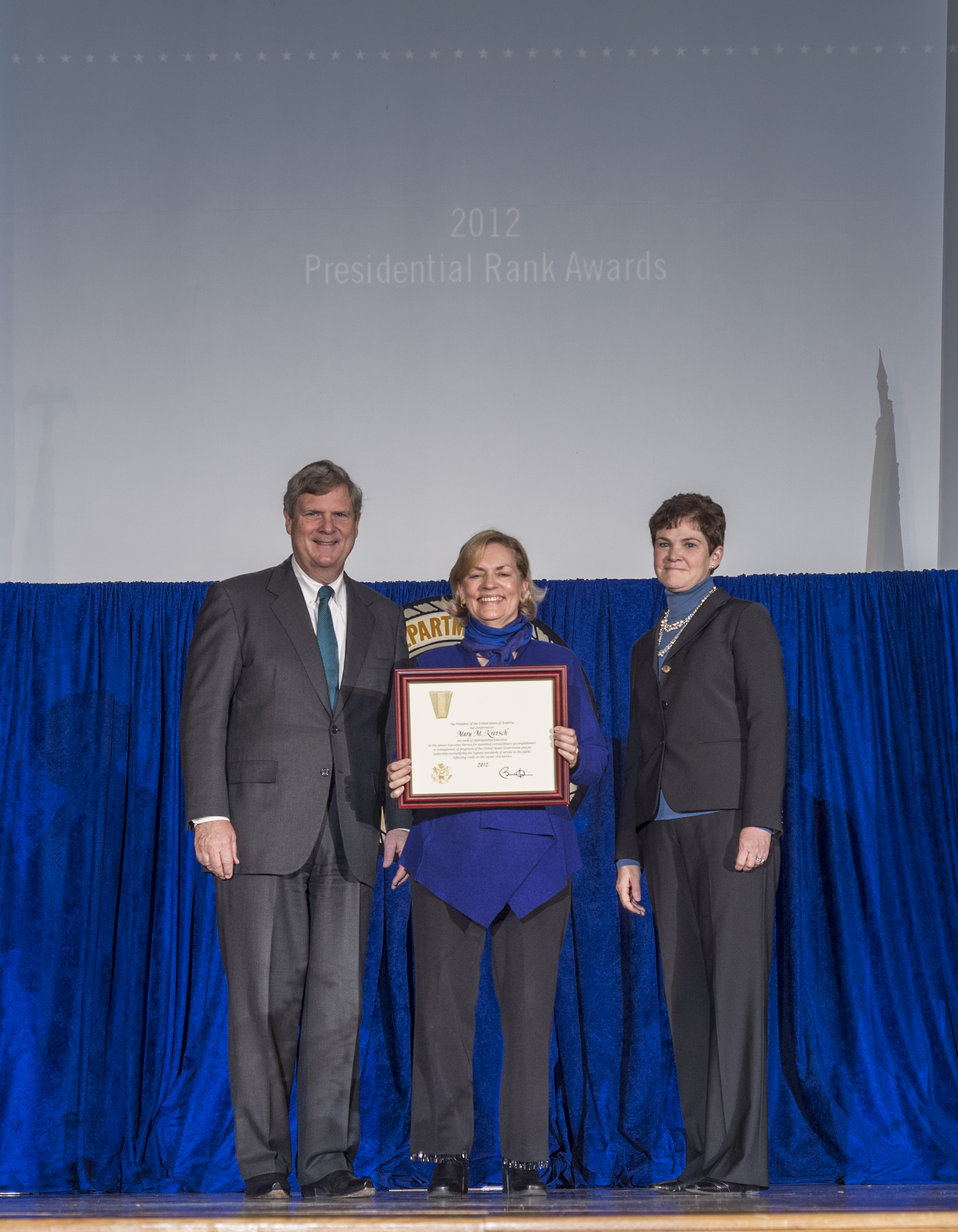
Agriculture Secretary Tom Vilsack and Agriculture Deputy Secretary Krysta Harden present the Presidential Rank Award to Mary M. Kretsch for Distinguished Executive in the Senior Executive Service for sustained extraordinary accomplishment in management of programs of the U.S. Government and for leadership exemplifying the highest standards of service to the public, reflecting credit on the career civil service at the 2013 Secretary's Honor Awards in the Jefferson Auditorium at the U.S. Department of Agriculture (USDA) in Washington, D.C. on Wednesday, Dec. 11, 2013.